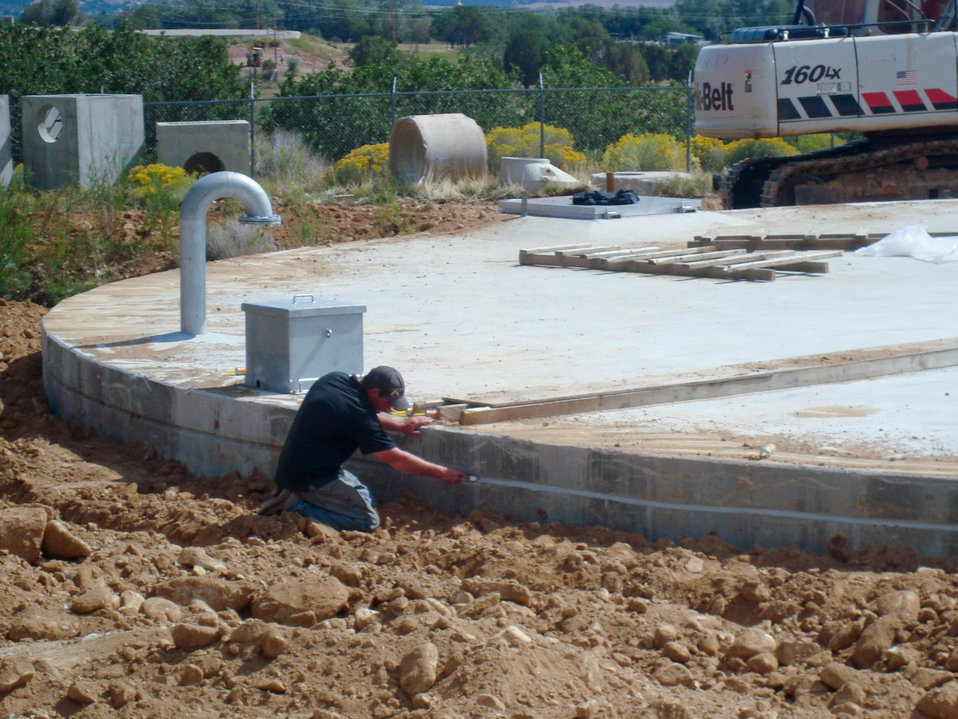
New water lines and fire hydrants for Monticello, Utah

A worker applies finishing touches on a U.S. Army Corps of Engineers Sacramento District’s Section 595 project, shown February, 2012, that will support new water lines and fire hydrants for the community of Monticello, Utah. The district’s Section 595 program has assisted over 30 rural Utah communities with critical water and wastewater infrastructure improvements since 2005.